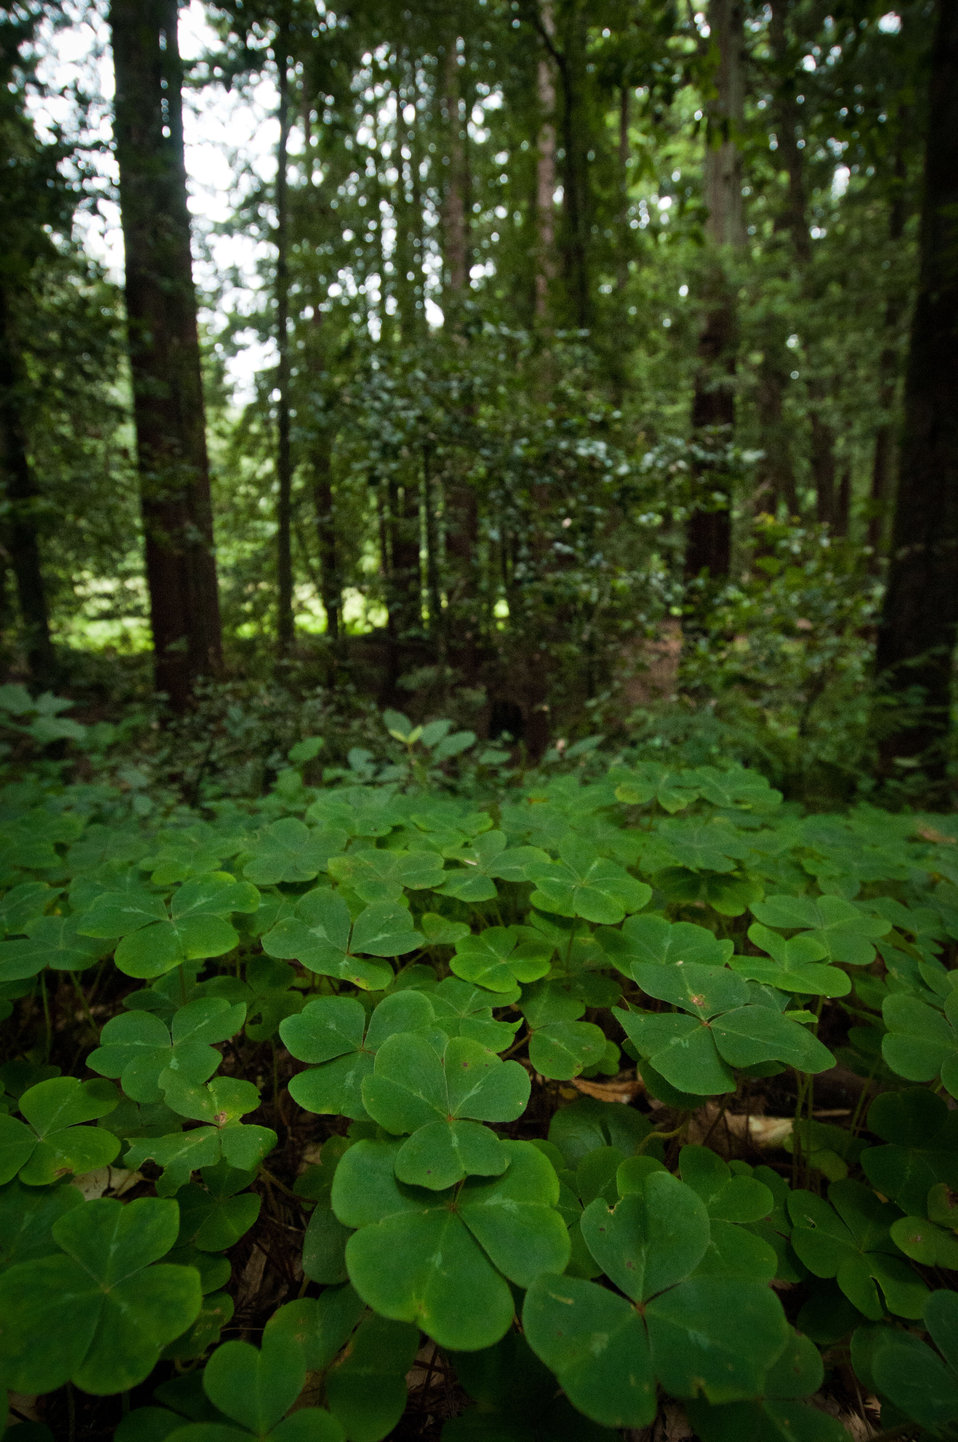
A private forest in Santa Cruz County, CA, on Friday, June 17, 2011. Watersheds such as this were factors in the America’s Great Outdoors Initiative (AGO) Monterey Bay Pilot Area Focus Session in the City of Watsonville’s Civic Plaza in California. It was a gathering of representatives from Federal resource management agencies to begin to identify partnership opportunities. The process was to help determine actions for achievable natural resource protection and enhancement that protect water quality and publicize voluntary stewardship of the watersheds such as this area that drains into the Monterey Bay National Marine Sanctuary. This area includes the counties of San Mateo, Santa Cruz, Santa Clara, San Benito, Monterey, and San Luis Obispo.